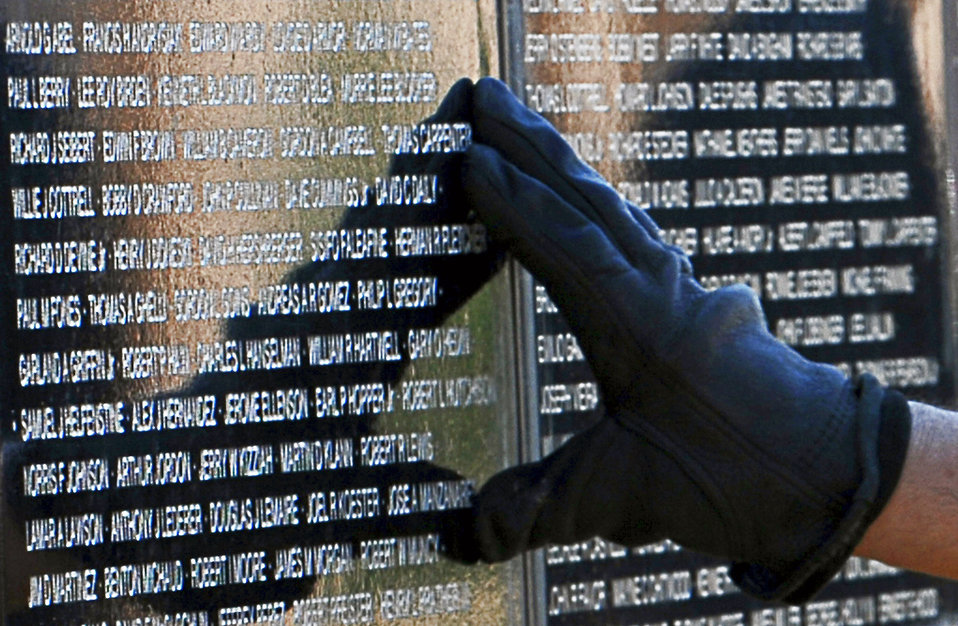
Traveling Vietnam Wall arrives in Clovis

Veterans and town residents in Clovis, N.M., the home of Cannon Air Force Base, view the traveling Vietnam Wall to honor the memories of those who gave their lives during the Vietnam War. The Wall is transported around the country to give people who otherwise may not be able to make the trip to Washington D.C. the opportunity see the Wall in their home town and pay their respects. The Wall was on display in Clovis from March 14 to 18.